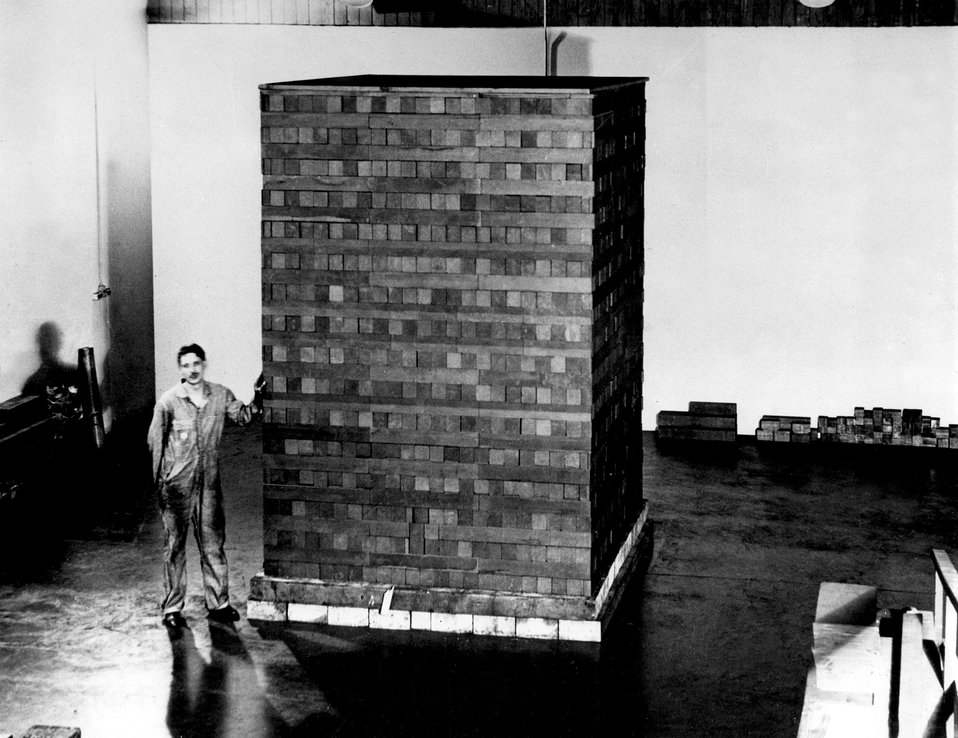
One of at least twenty-nine similar uranium-graphite lattice structures.